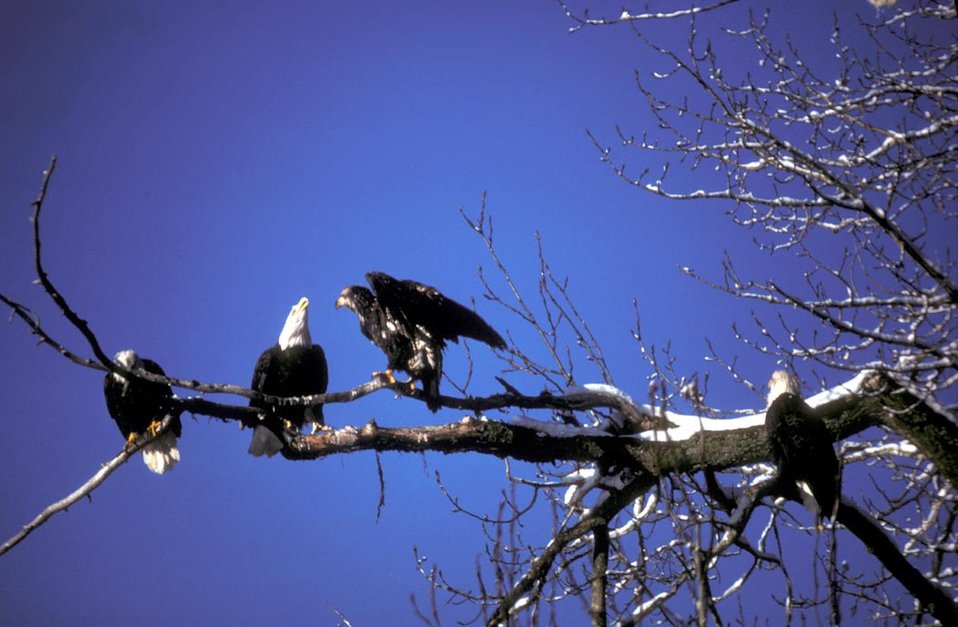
Bald Eagle Adults and Fledgling.